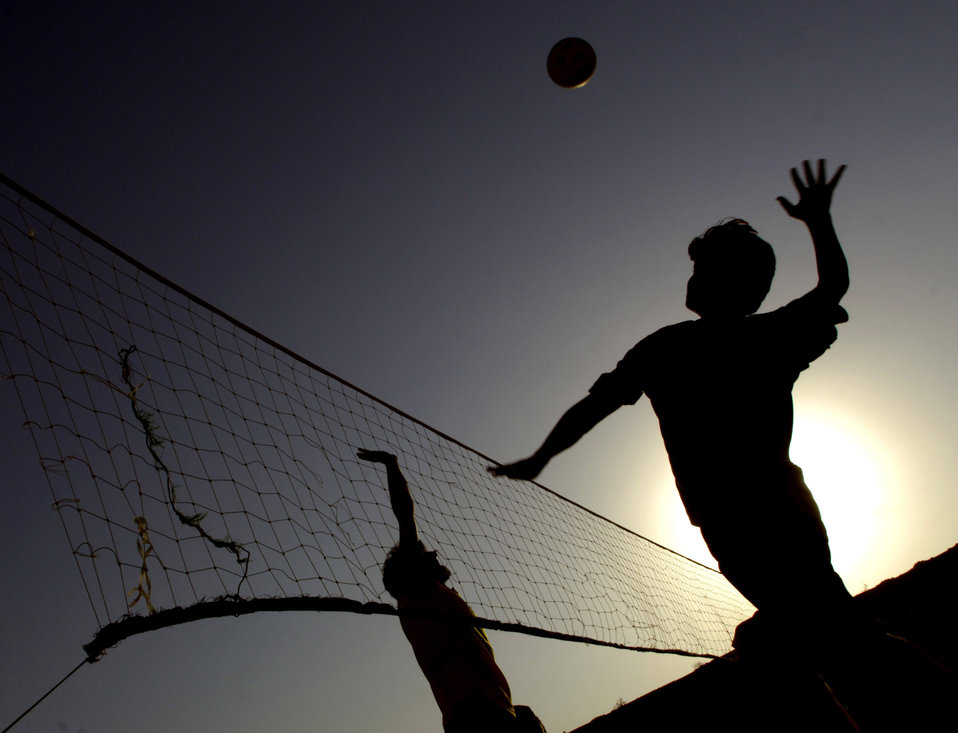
Volleyball unites Afghans, Americans

Airmen and Soldiers from the Provincial Reconstruction Team host a volleyball game Aug. 26 for Afghan high school students Aug. 26 at Forward Operating Base Mehtar Lam, Afghanistan. The weekly volleyball games give students a chance to meet and interact with military members in a friendly atmosphere.